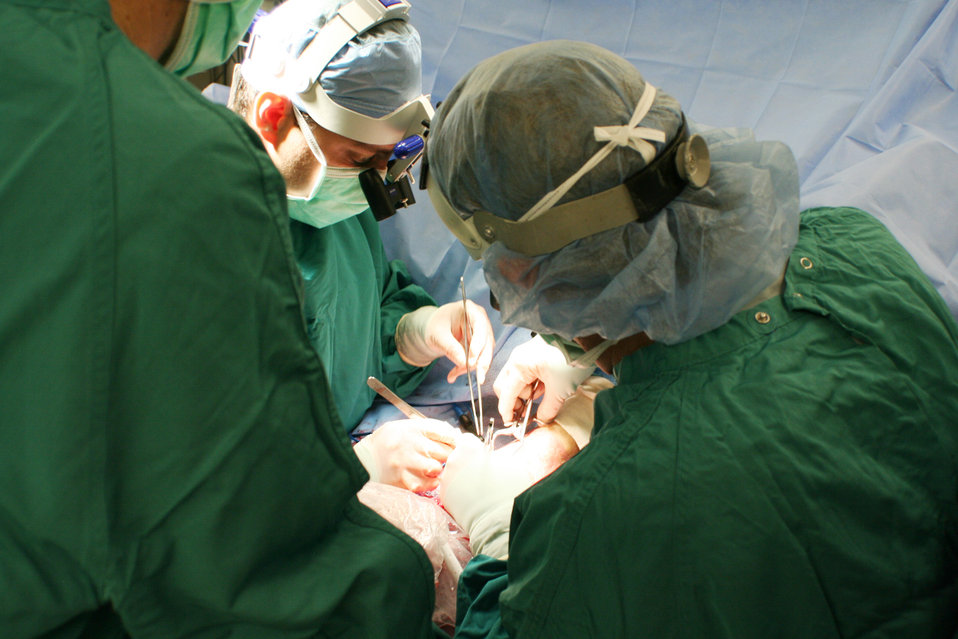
First hand transplant in DOD performed at Wilford Hall

A surgical team composed of military and civilian doctors perform the first-ever female hand transplant Feb. 17, 2010, at Wilford Hall Medical Center, Texas. Retired Master Sgt. Janet McWilliams is the 10th person to undergo this procedure and the first to have it done in a Defense Department facility.